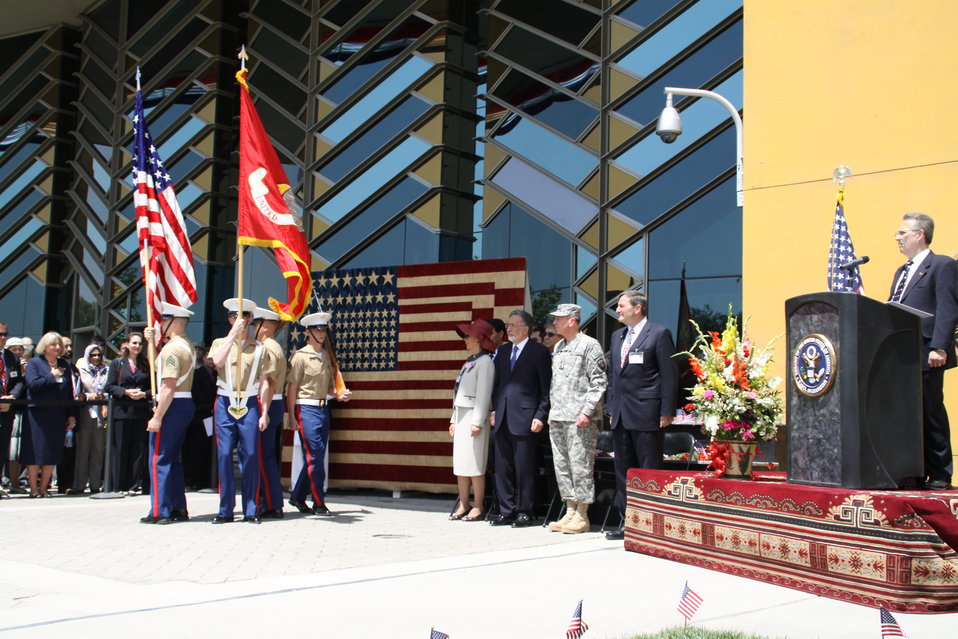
Kabul Official July 4th Celebration